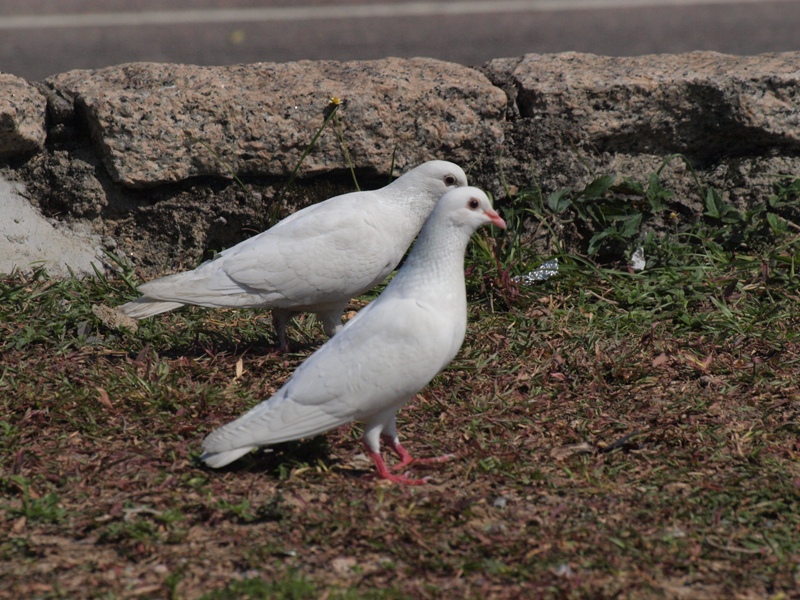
中文: 在部分藝術的文化中，原鴿與草地的配合是和平象徵。